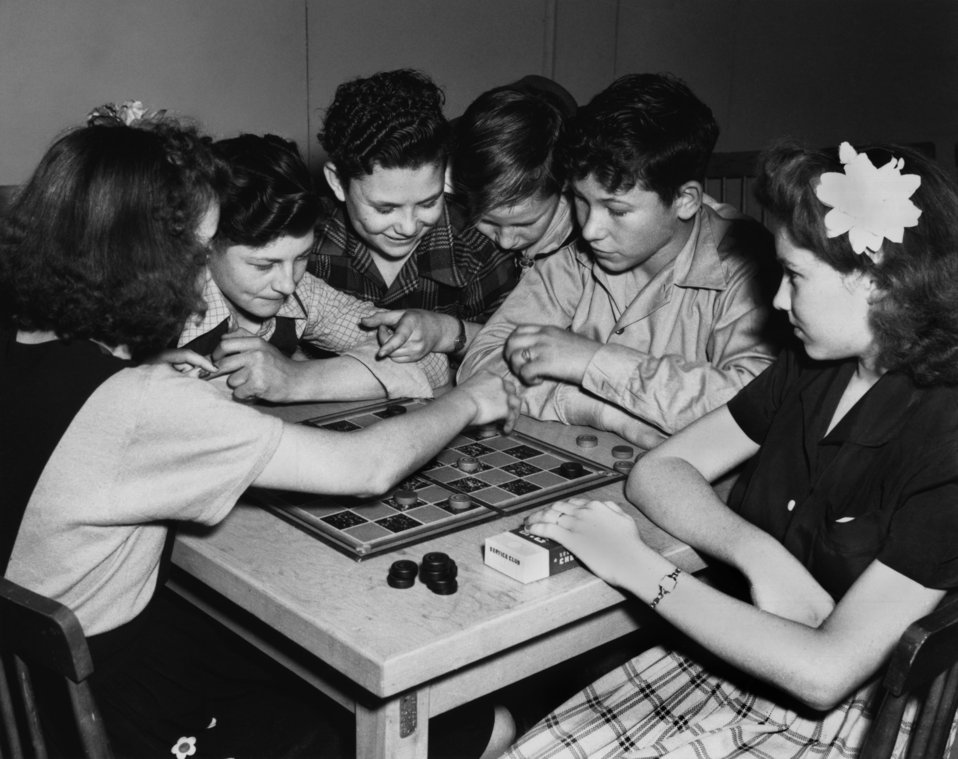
Gamble Valley Community Building Checker Game Oak Ridge 1944

PRO 203-1 DOE photo Ed Westcott 12-30-1944 Oak Ridge Tennessee